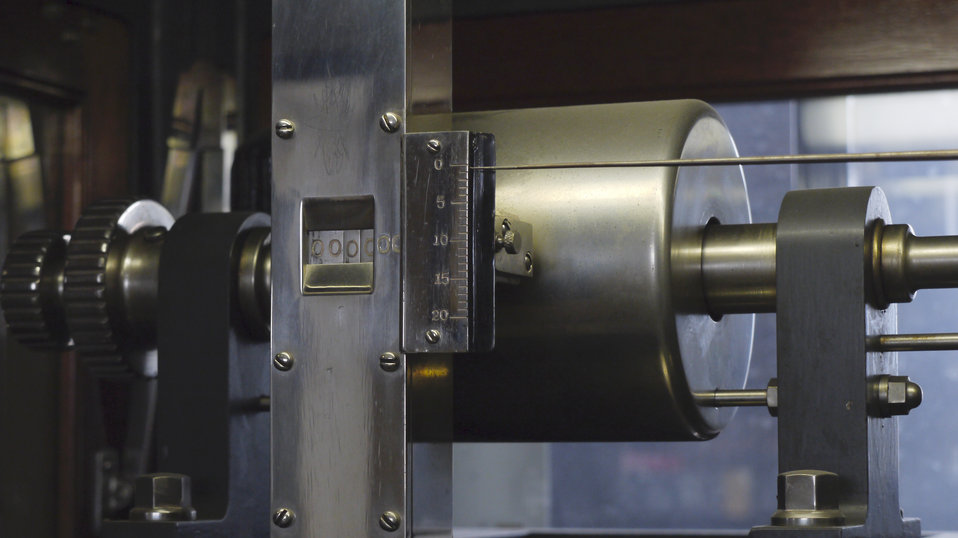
U.S. Department of Agriculture’s (USDA) Grain Inspection, Packers, and Stockyard Administration (GIPSA) industrial specialist Marcus Harwitz uses the mechanical weigh beam of the Master Scale to obtain the weight of the railroad test car at the USDA GIPSA Master Scale Depot in Chicago, IL on Jul 2, 2013. USDA GIPSA entered into an agreement with the National Institute of Standards and Technology (NIST) and the Association of American Railroads (AAR) in 1980 transferring responsibility to USDA’s GIPSA to maintain the Master Scale facility in Chicago, IL and calibrate all the master scales in the continental U.S. annually.